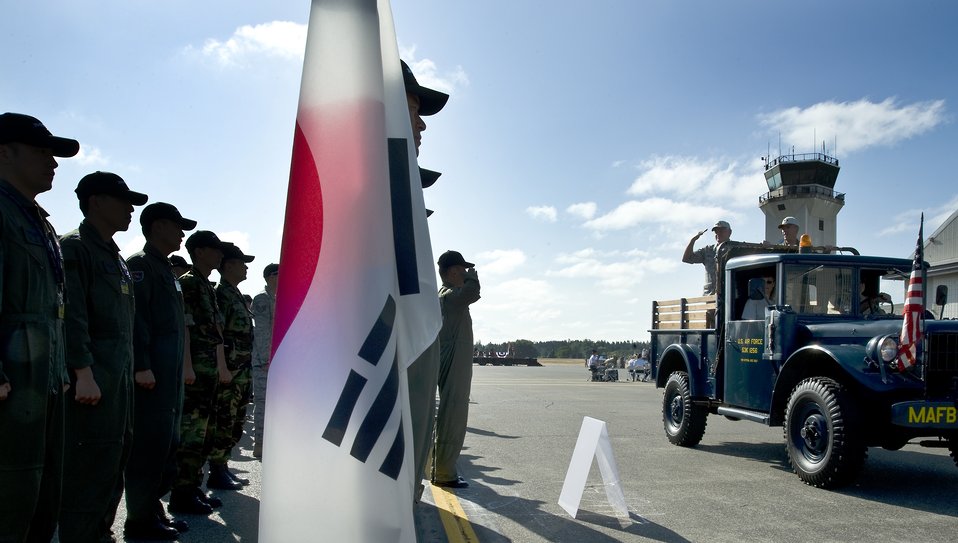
Air Mobility Rodeo begins at McChord

Gen. Arthur J. Lichte salutes the South Korean team participating in the Air Mobility Rodeo 2009 while conducting a pass and review during opening ceremony July 19 at McChord Air Force Base, Wash. General Lichte is the commander of the Air Mobility Command from Scott AFB, Ill.